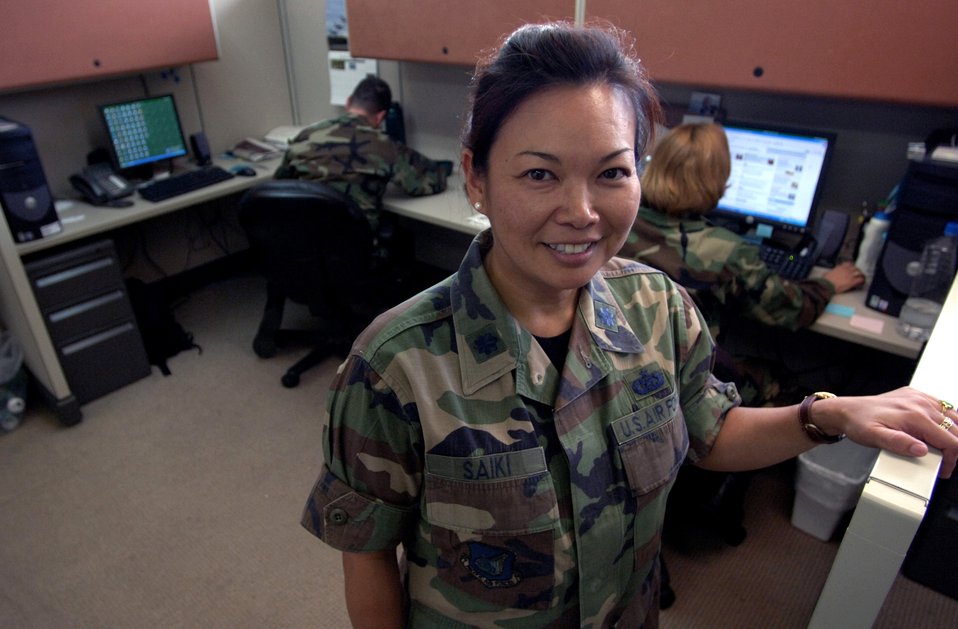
Chief PA

Lt. Col. Tracey Saiki is the chief of public affairs at Kenny Warfighting Headquarters at Hickam Air Force Base, Hawaii. Colonel Saiki is responsible for telling the KHQ story through media and community relations events. She is also involved with the strategic communications key themes and messages as part of information operations.